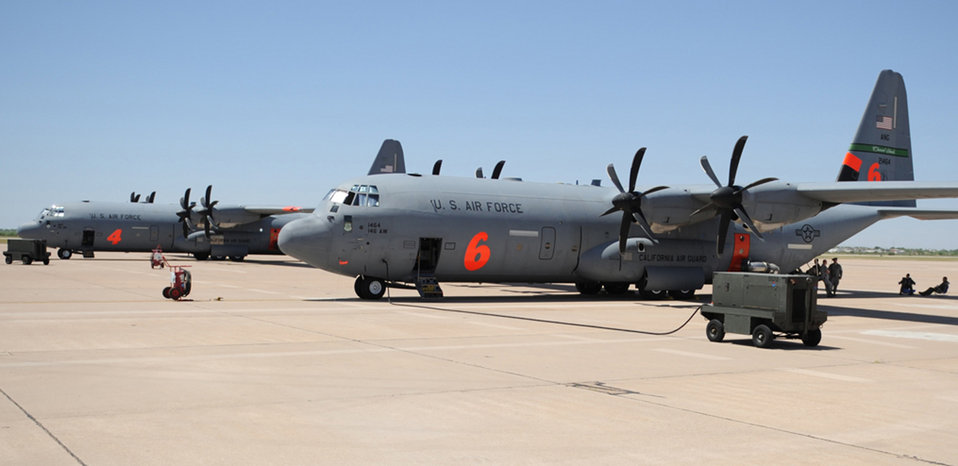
Firefighting

Airmen prepare several C-130 Hercules for wildfire fighting operations across Texas April 18, 2011, at Dyess Air Force Base, Texas. These C-130s are equipped with Modular Airborne Firefighting Systems, which are capable of dispensing 3,000 gallons of water or fire retardant in less than 5 seconds. The wildfires have spread across parts of Texas and have burned more than 1,000 square miles of land.